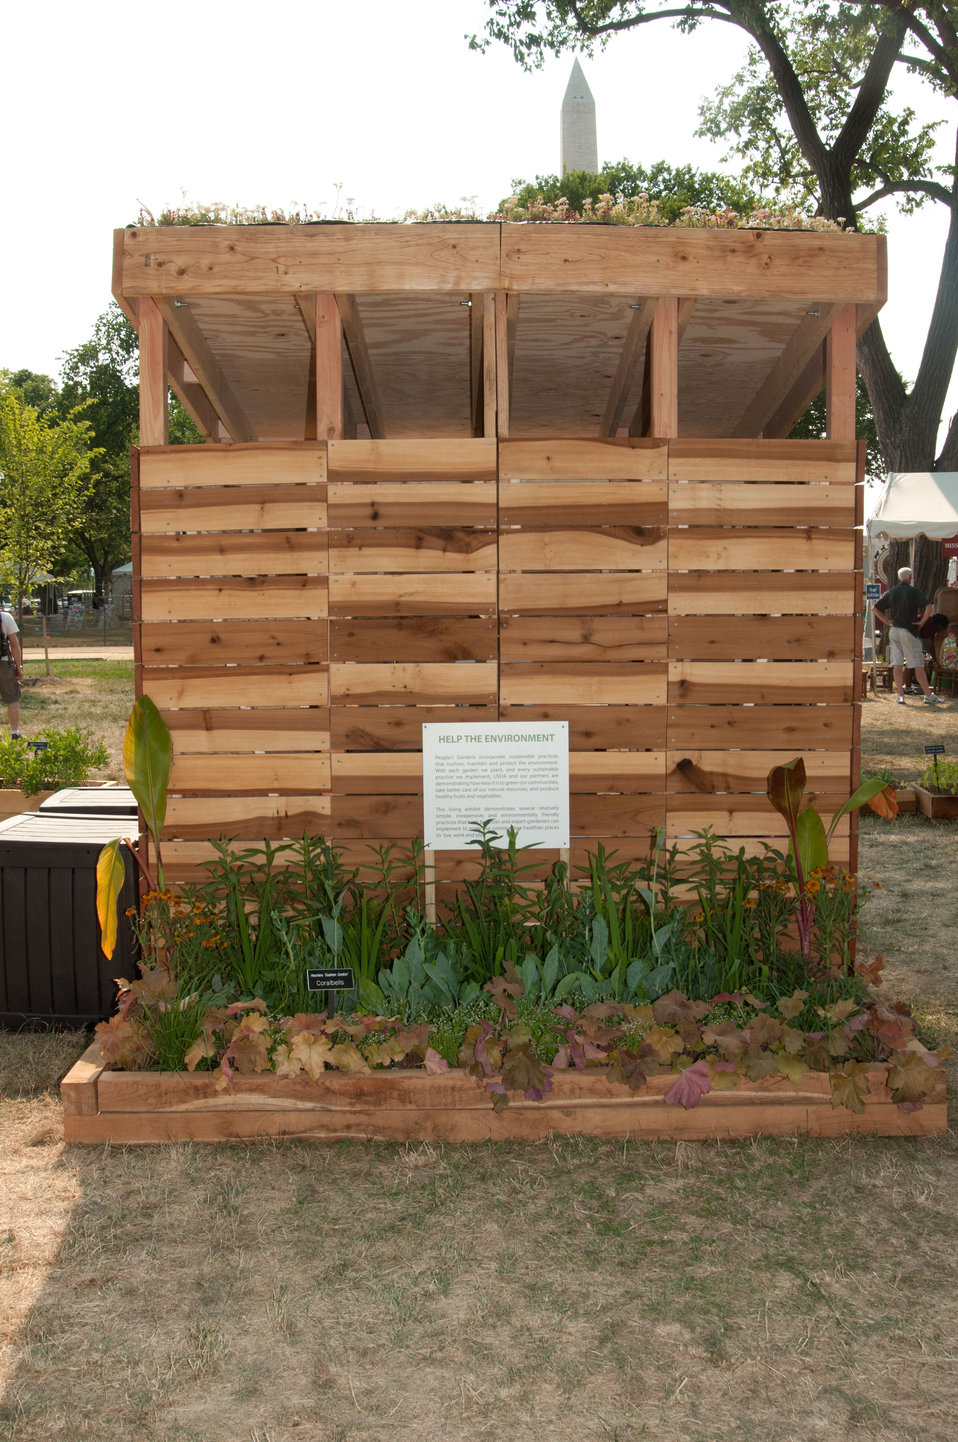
U.S. Department of Agriculture (USDA), People’s Garden Initiative, Green Roof Shed at the 2012 Smithsonian Folklife Festival, on the National Mall in Washington, D.C., on Thursday, June 28, 2012. The siding on this shed is made of recycled lumber from trees that came down in storms. Green roofs are attractive, practical benefits include additional thermal protection, noise reduction and increase the life expectancy of the roof. U.S. Department of Agriculture (USDA) partnered with the University of the District of Columbia’s (UDC), Department of Agriculture and Urban Design on the design and construction of this shed. UDC is a Land Grant university. For more information and answers to questions such as how do you build a roof to accommodate a green roof? And is it possible to modify an already built roof to add a green roof? Go to blogs.usda.gov/2012/07/05/going-green-green-roofs-and-rai... One of the three themes this year is “Campus and Community.” It celebrates the 150 years of the USDA and the Land-Grant University System. The U.S. Department of Agriculture (USDA) and the Land-Grant system extend education across the country, contributing to American agriculture success and rural prosperity. “Campus and Community” has demonstrations, discussions, hands-on activities, and entertainment to that showcase the many ways that this partnership works to improve American agriculture and rural life.